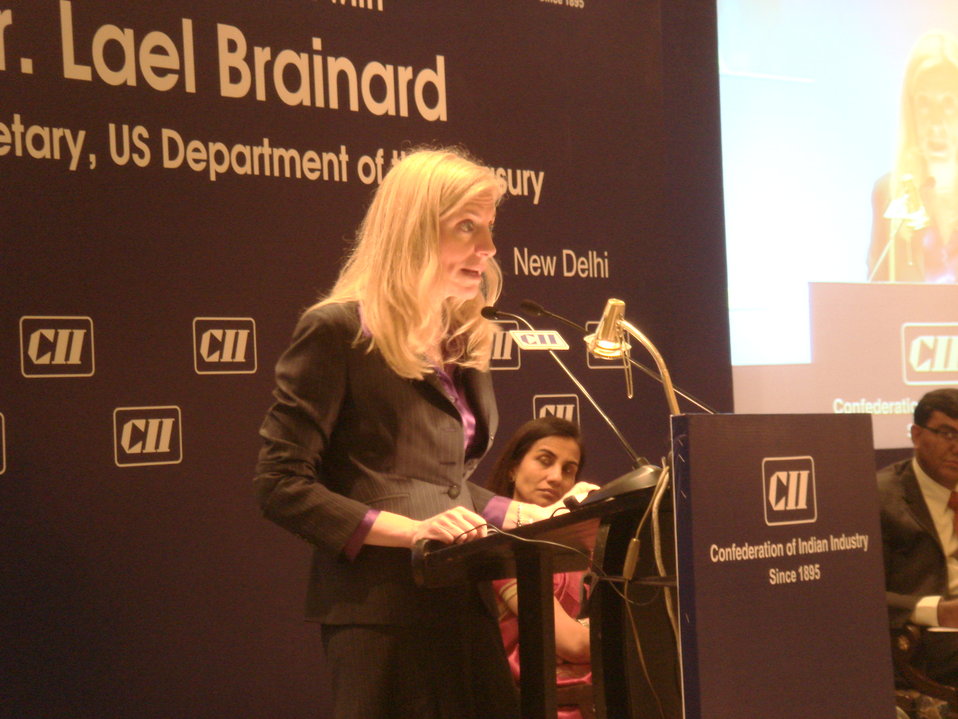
Lael Brainard's Visit to India

Under Secretary Lael Brainard speaking at an event hosted by the Confederation of Indian Industry.